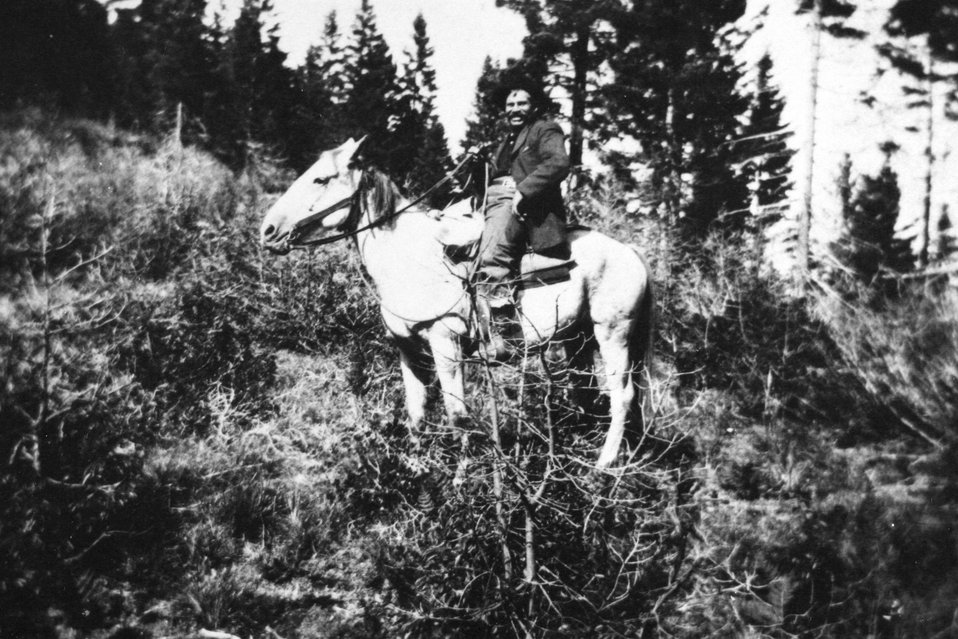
George Billings. C.1910